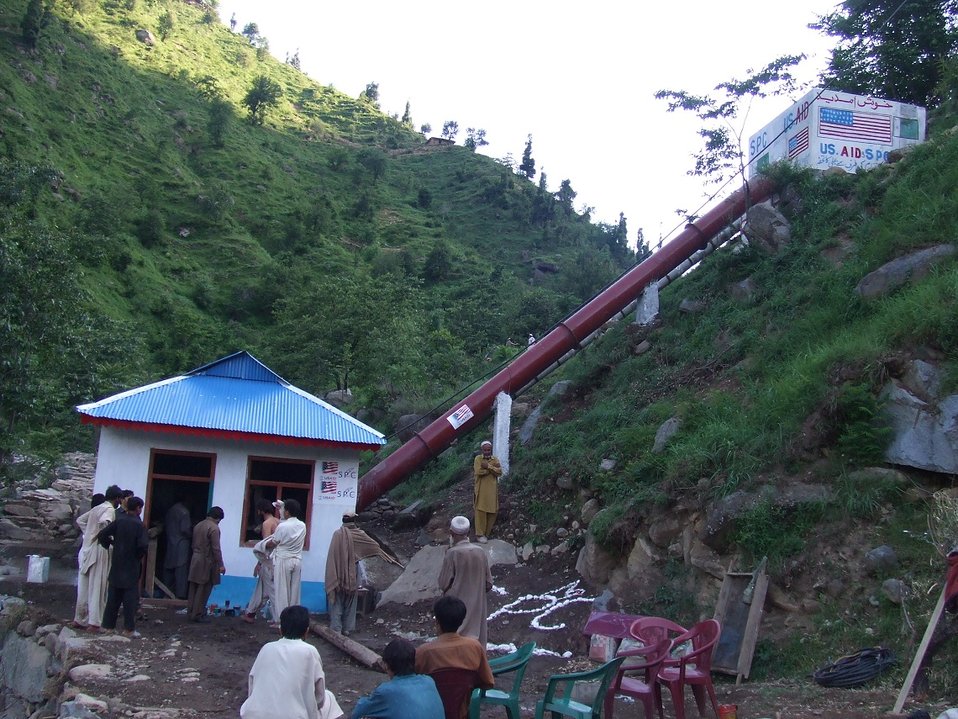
During Launch of Power Project

A new wave of energy has swept a remote village of Matta Tehsil. Children are excited, elders relieved. Electricity had lit their dark houses after over six decades of independence and connected them to the modern world.
“We can now watch cartoons on the TV just like all the other children,” said an excited child during the inauguration of a micro-hydropower station on Saturday.
The community-based power station, which will supply electricity to about 110 households in Swatai village, has been installed with the assistance of Small Grants Ambassador Fund Program of the USAID in collaboration with the Swat Participatory Council (SPC).